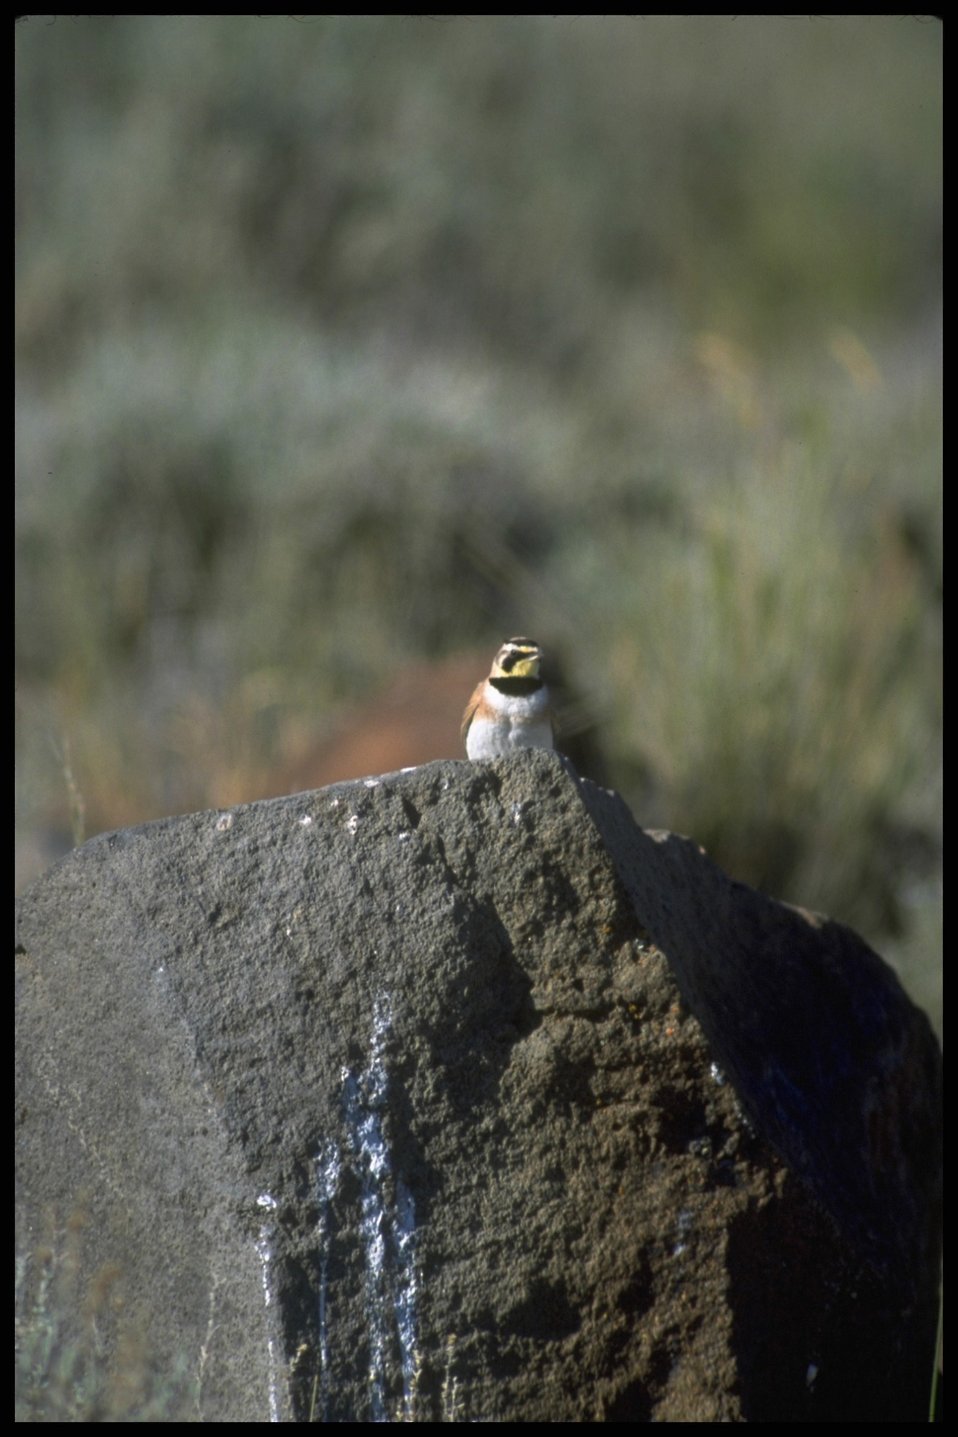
Far shot of Horned Lark, Lakeview District.